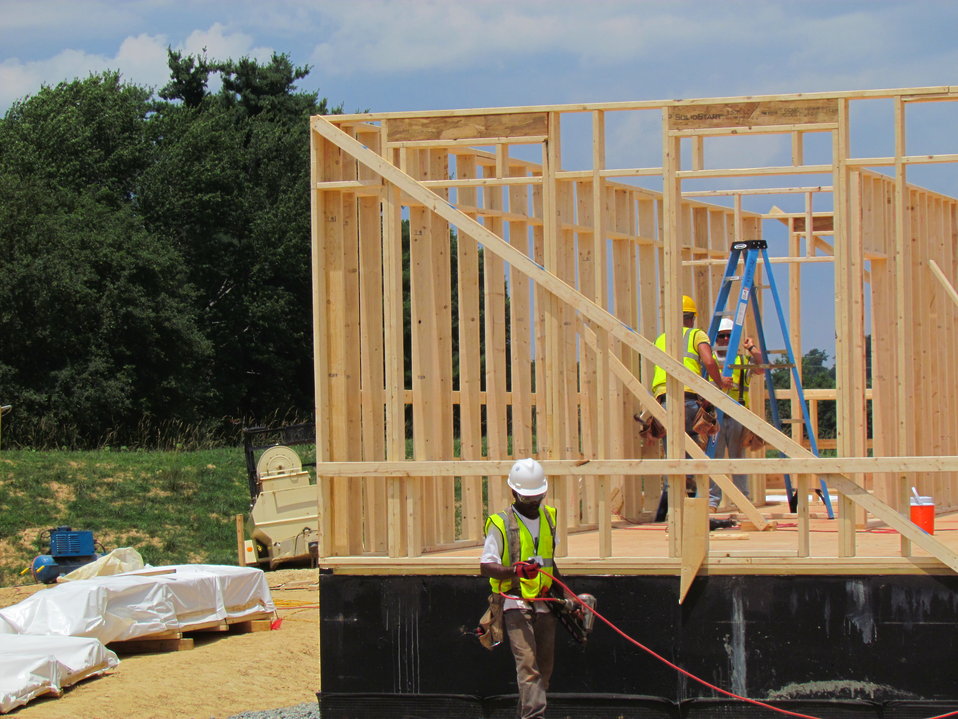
Net-Zero Energy Residential Test Facility - Picture showing workmen framing first floor of the test facility.